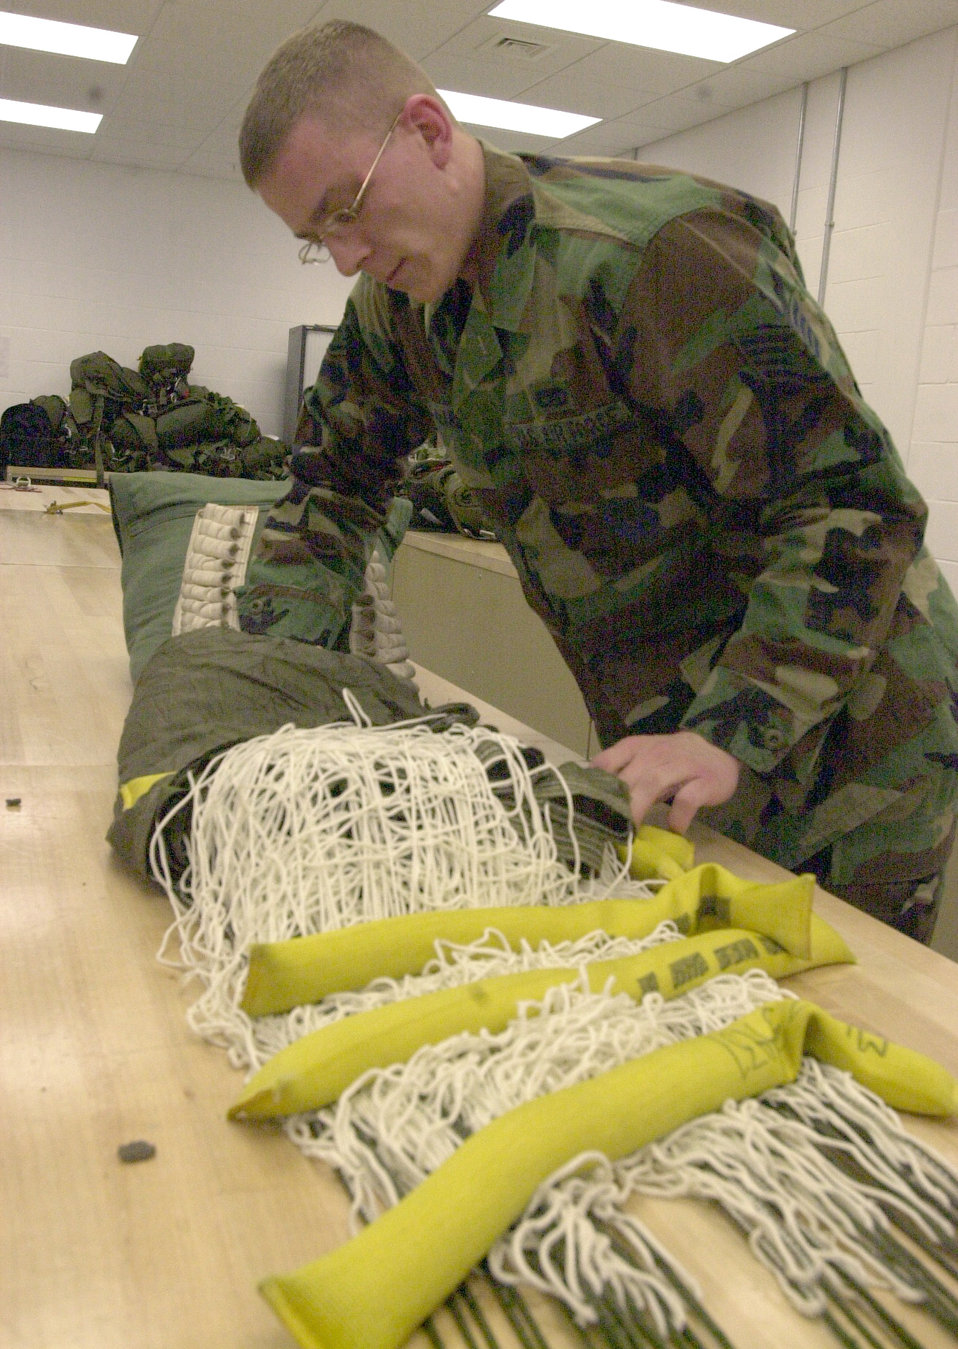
Packin' the chute

ROYAL AIR FORCE MILDENHALL, England -- Staff Sgt. Paul McArdle repacks a parachute after inspecting it to ensure its safety. He is the fabrication section chief for the100th Maintenance Squadron's survival equipment flight here.